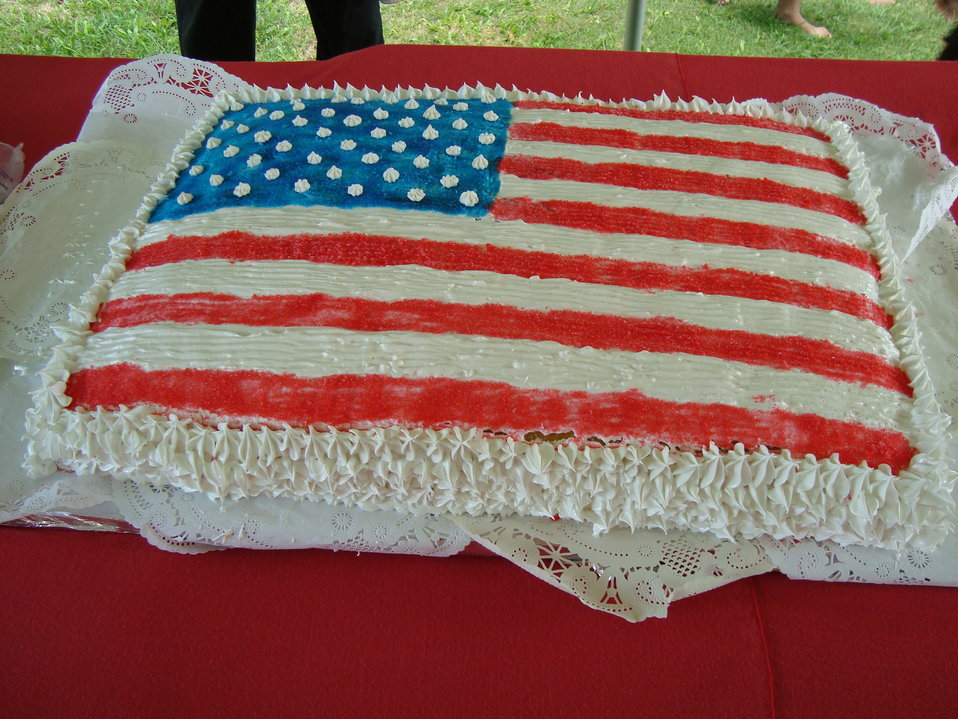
Guests Enjoy the American-Flag Decorated Cake

Over 250 guests, including U.S. personnel and local staff, enjoy the American flag-decorated cake at the United States Interest Section Havana in Cuba's U.S. Independence Day celebration at Chief of Mission Jonathan D. Farrar's residence in Havana, Cuba, on July 2, 2010.